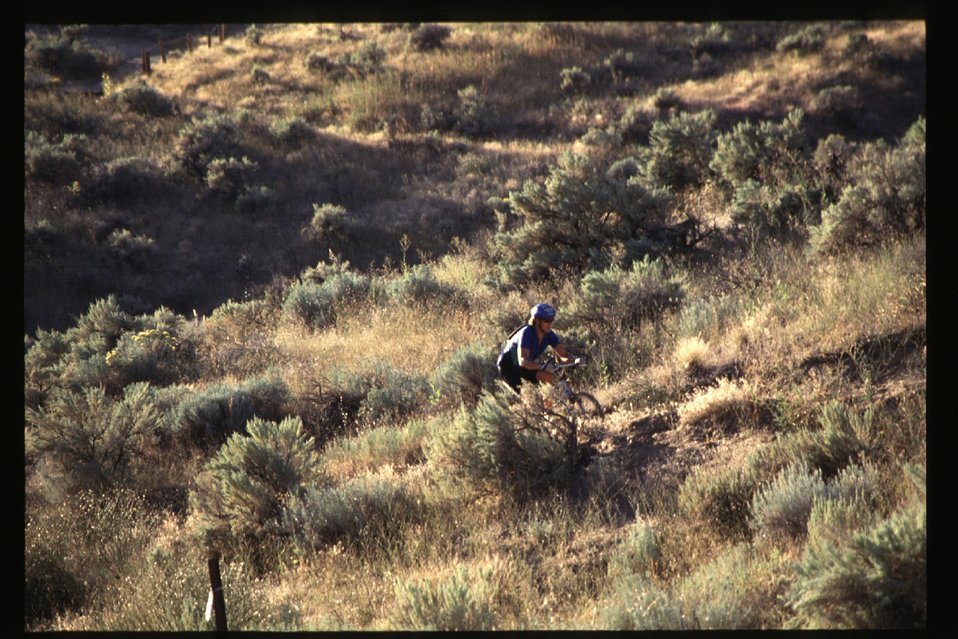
Biker in Boise Foothills Boise Front Four Rivers Field Office LSRD Lower Snake River District